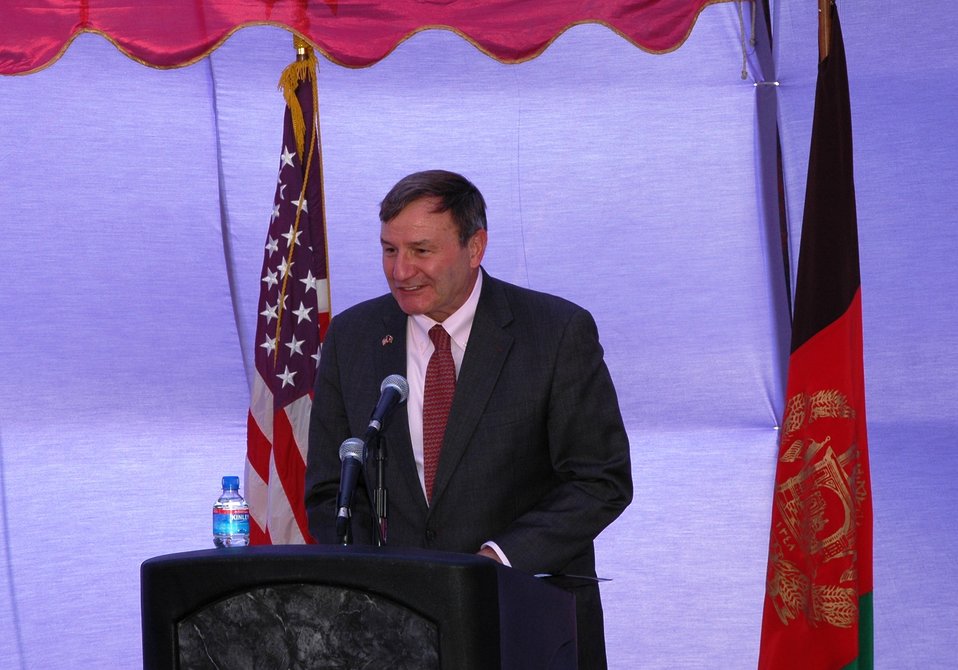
105 MW Tarakhil Power Plant Handover